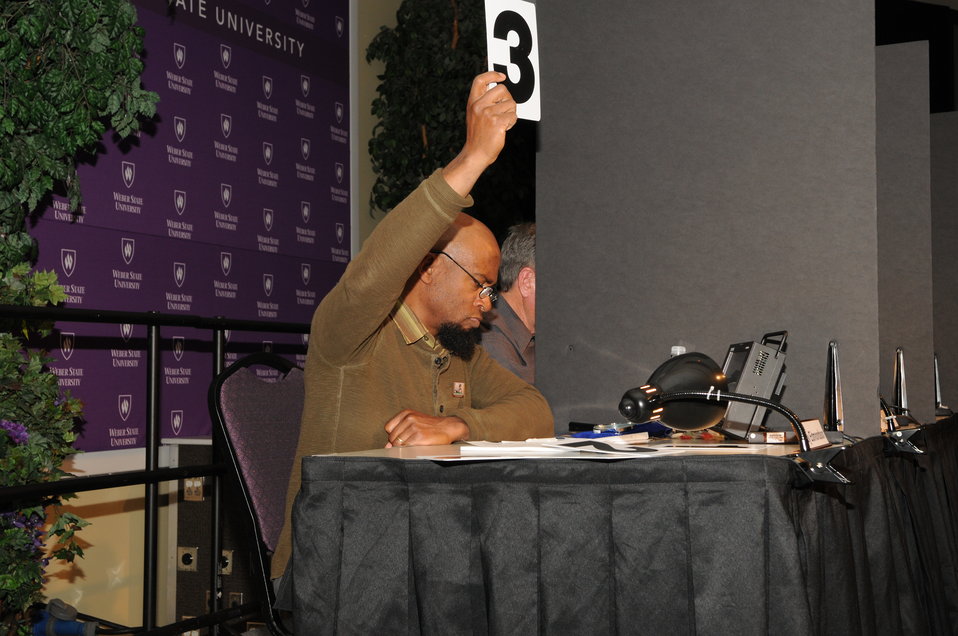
Judging

The U.S. Fish & Wildlife Service sponsored the 2012 Federal Duck Stamp Art Contest September 28 and 29 in Ogden, Utah, at Weber State University. A panel of five judges was responsible for choosing the art work used to design the 2013-2014 Migratory Bird Hunting and Conservation Stamp.